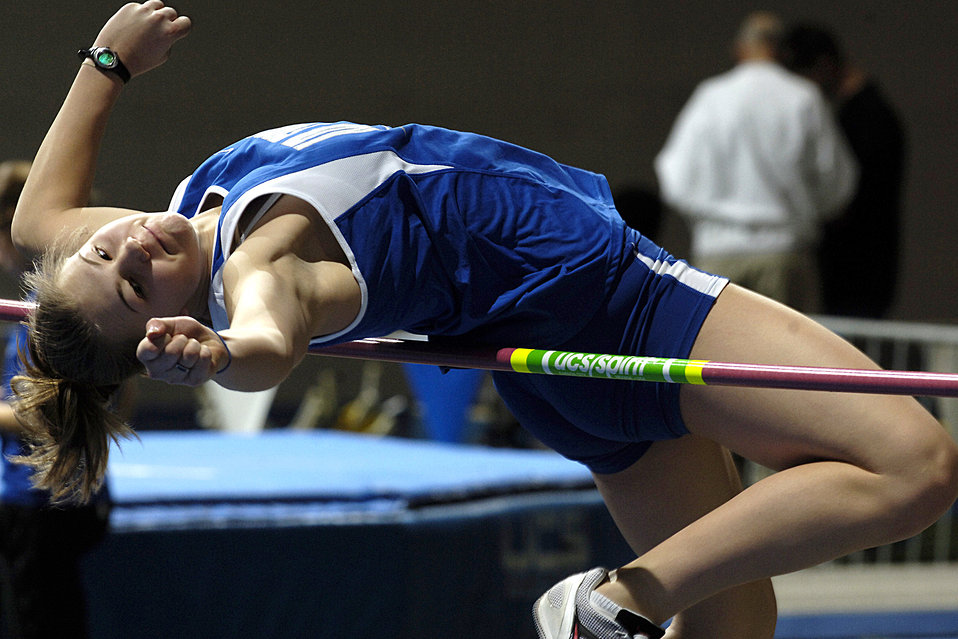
High jump

U.S. Air Force Academy Falcon sophomore Danielle McCarty finished fourth in the collegiate high jump with a jump of 5 feet 1/4 inch as the Air Force track and field team officially opened the season by hosting the annual Air Force All-Comers Meet Jan. 13 at Colorado Springs, Colo.